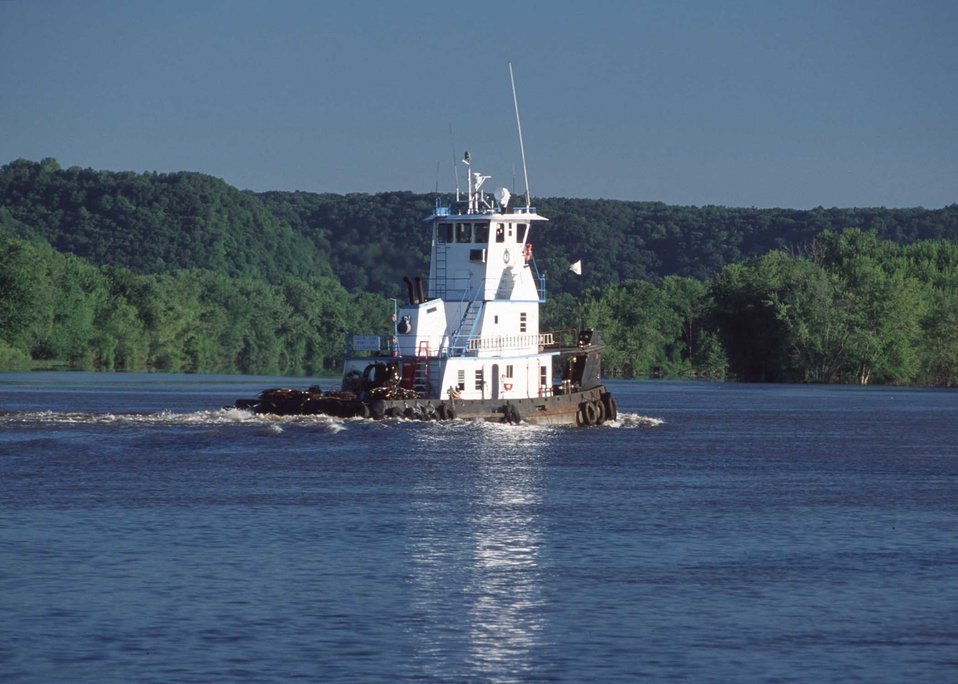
Upper Mississippi River Watershed -- Wisconsin.